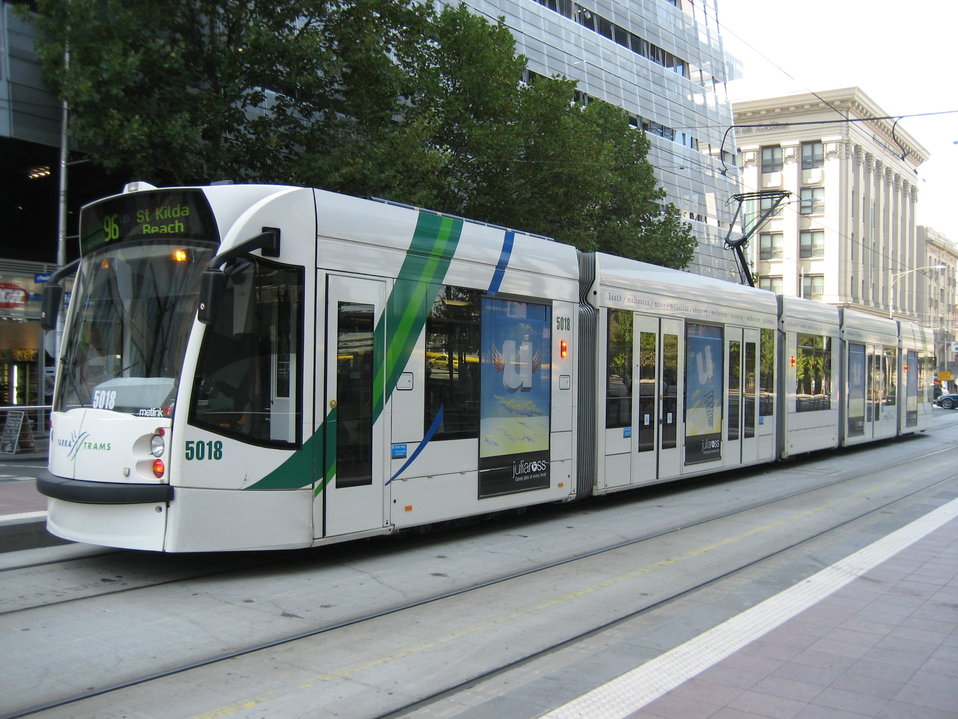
D2.5018 on route 96 at Spencer Street.